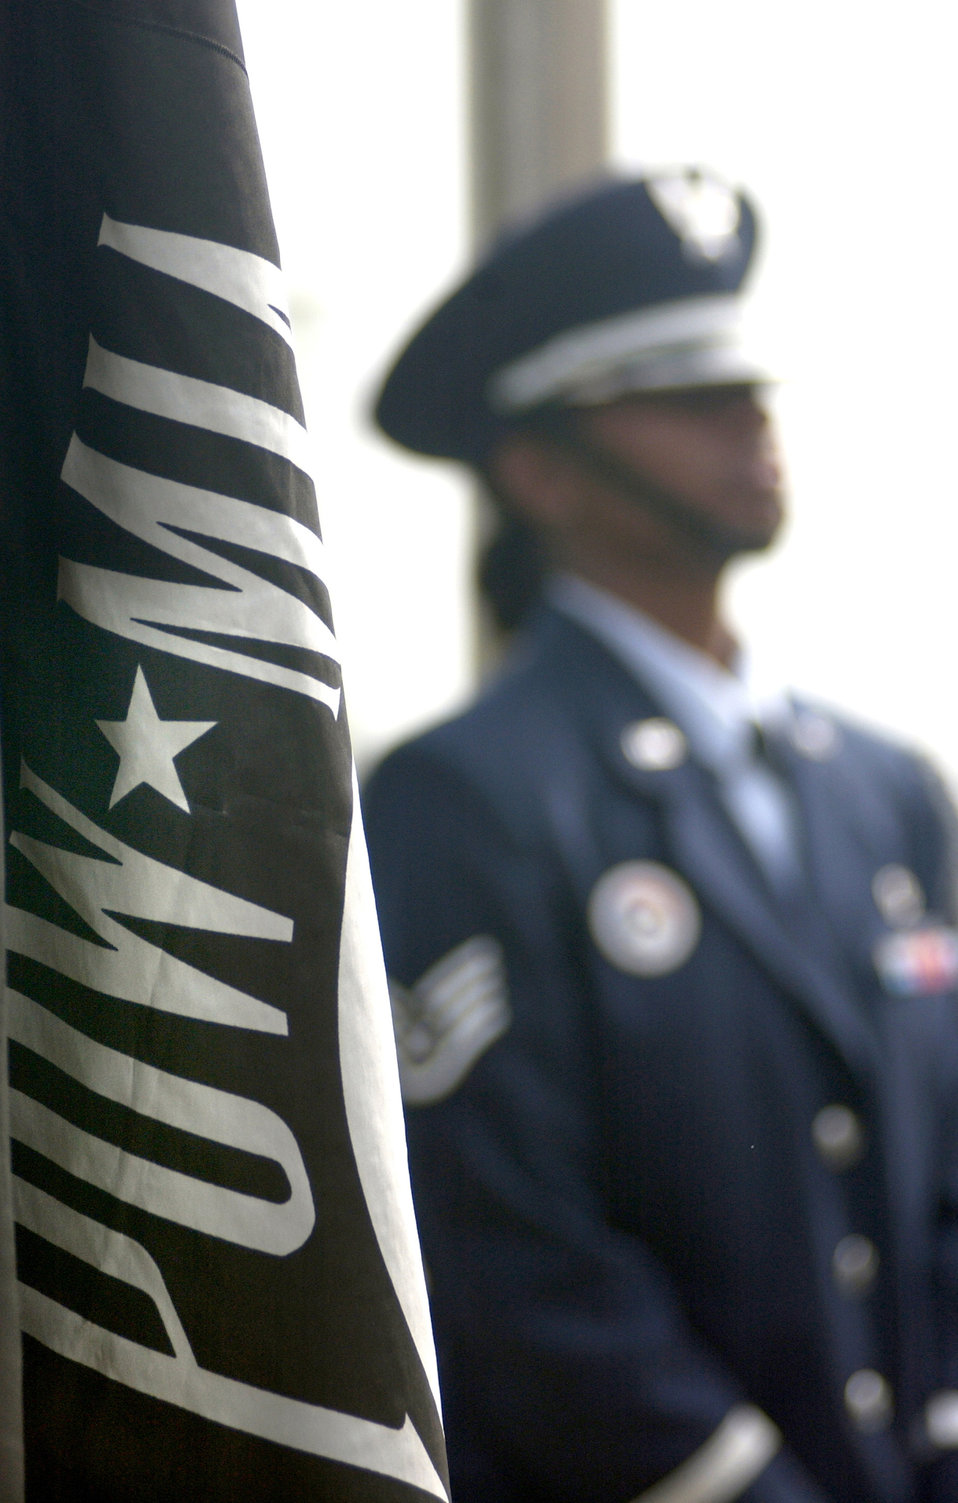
Remembering those who served

AVIANO AIR BASE, Italy -- Staff Sgt. Audrey Roland participates as a member of the base honor guard in lowering the Italian, American and NATO flags during the Prisoners of War and Missing in Action Retreat Ceremony here Sept. 14. Sergeant Roland is assigned to the 31st Civil Engineer Squadron.